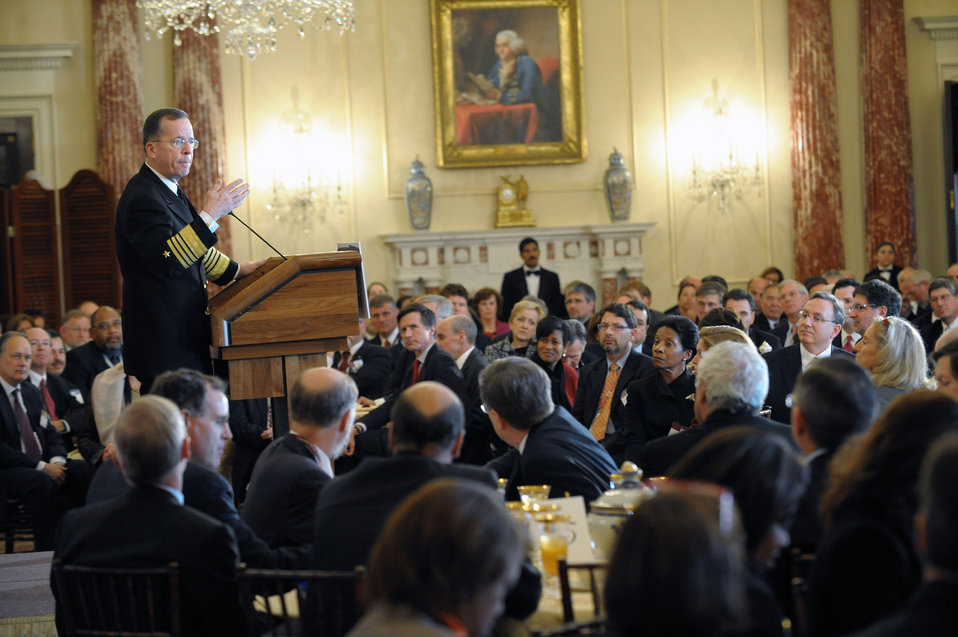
Admiral Mullen Delivers Remarks

Chairman of the Joint Chiefs of Staff, Admiral Michael Mullen, delivers remarks at the 2011 Global Chiefs of Mission Conference at the U.S. Department of State in Washington, D.C., on February 2, 2011.